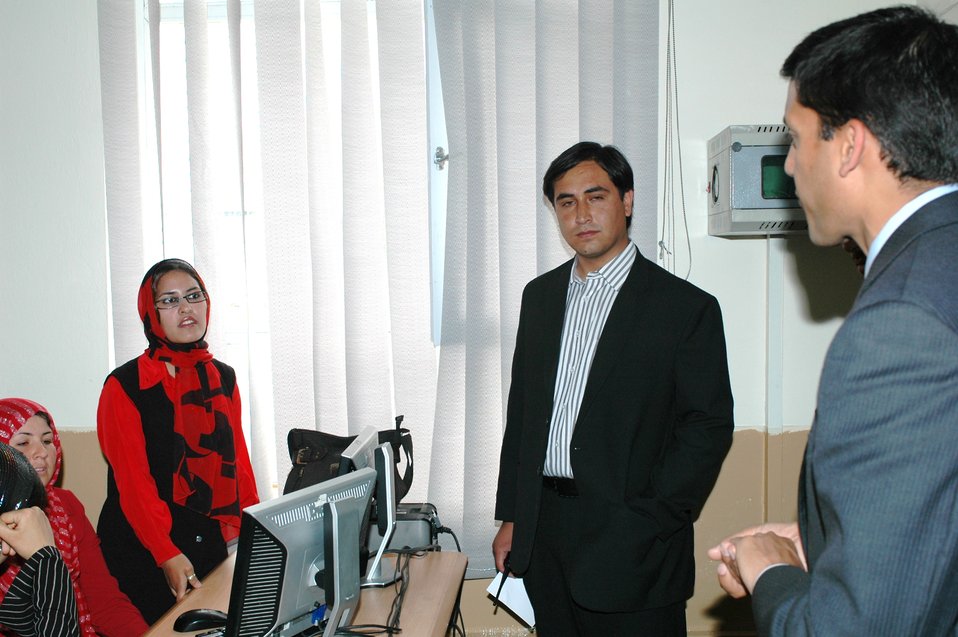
Dr Shah Visits Votech in Kabul